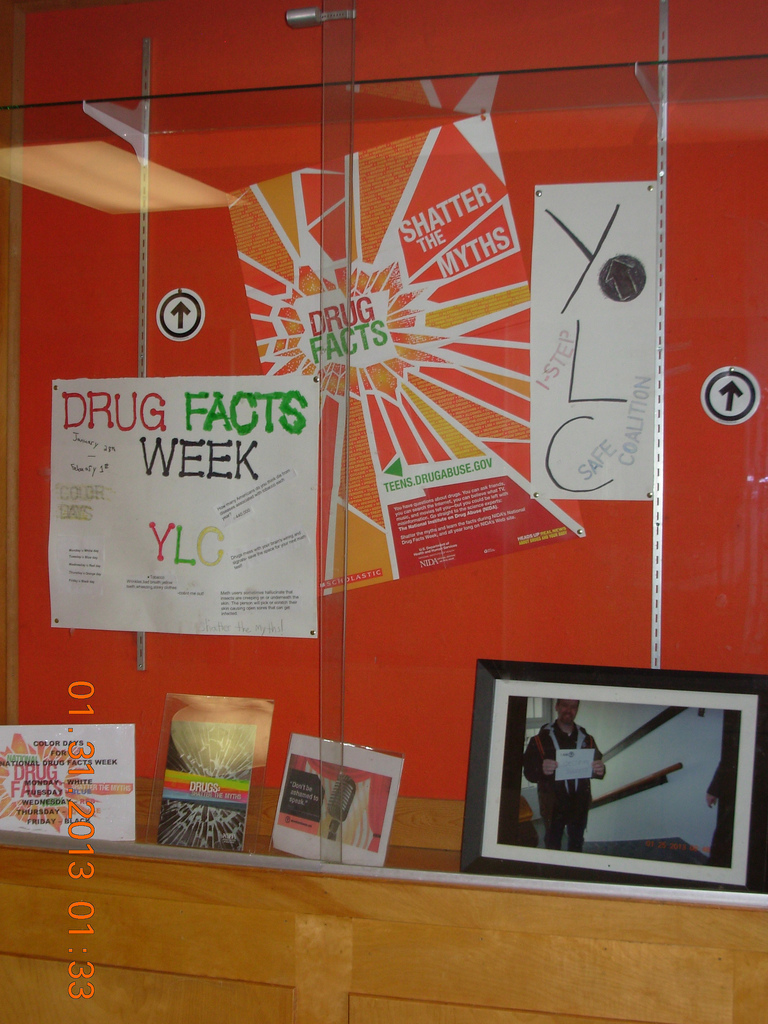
Iowa's SAFE Coalition, NDFW 2013

Van Buren County, IA. SAFE Coalition high school student run groups fighting issues of drug, alcohol, and tobacco abuse during NDFW 2013.